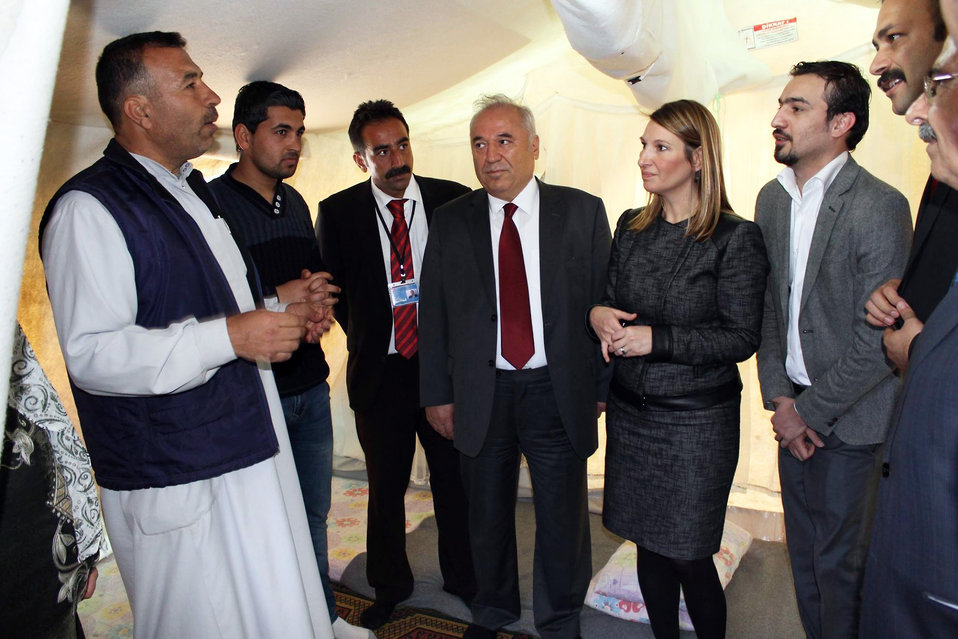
Deputy Secretary Higginbottom Meets With Syrian Refugees and Turkish Officials

Deputy Secretary of State for Management and Resources Heather Higginbottom meets with Syrian refugees and Turkish officials at a Syrian refugee camp outside of Adana, Turkey, on March 21, 2014.